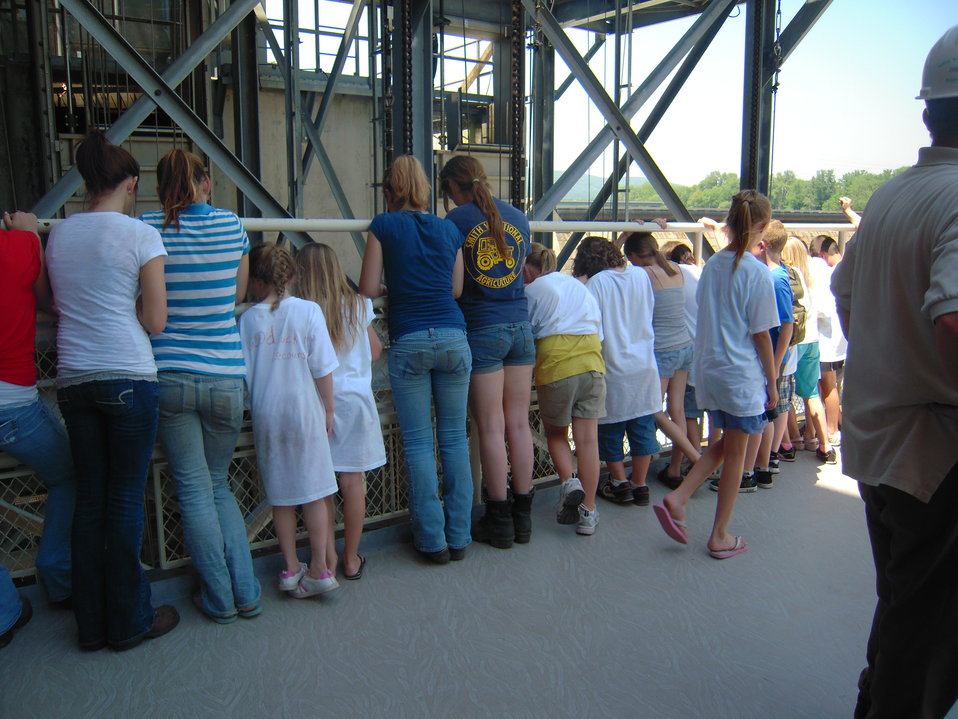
Watching the fish lift from observation deck